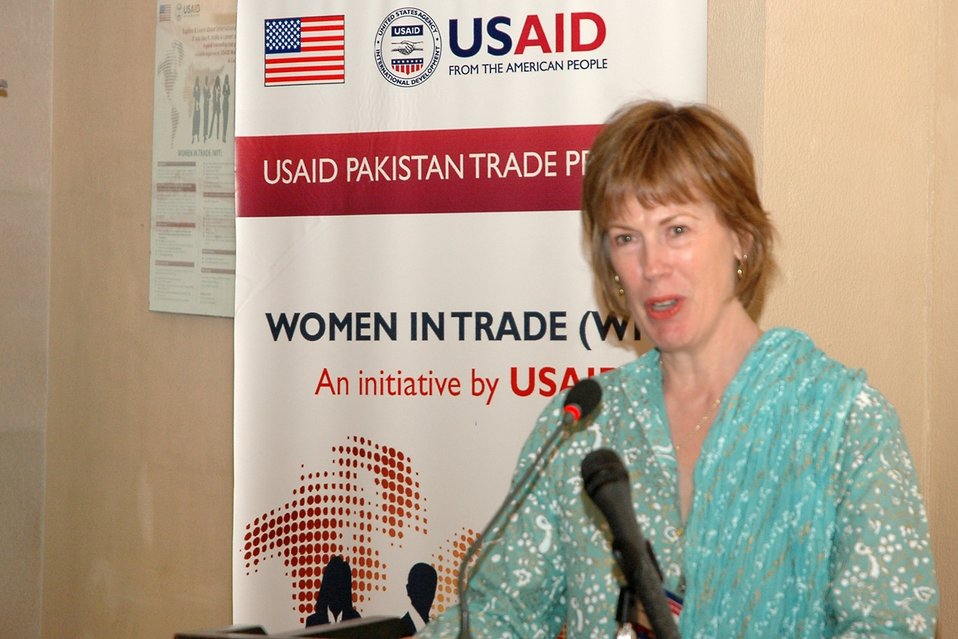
Dr. Marilyn Wyatt, wife of U.S. Ambassador Cameron Munter, speaks at the launch of USAID's Women in Trade Initiative.

Dr. Wyatt: “By raising the role of women in the international trade sector, we can enable them to contribute not only to Pakistan’s economy, but to the overall development of the country.”